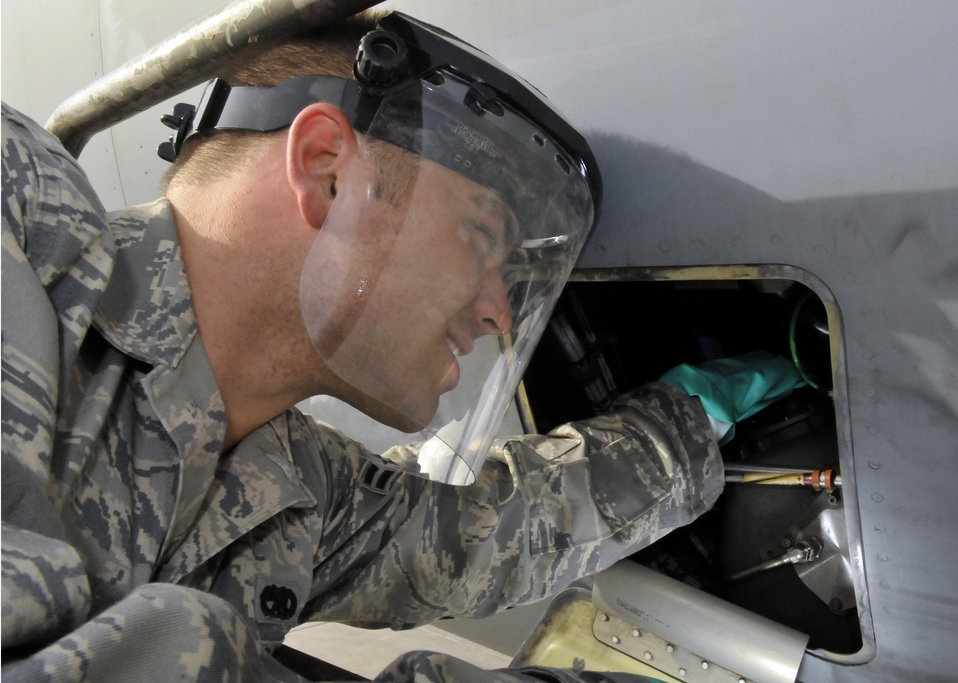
Balad Airmen

Airman 1st Class David Reynolds checks the oil on engine number one of a C-17 Globemaster III July 12, 2010, at Joint Base Balad, Iraq. Unlike fighter aircraft that are close to the ground, the C-17's engine is set approximately 10 feet of the ground, requiring the use of a maintenance stand to gain access. Airman Reynolds is a 521st Air Mobility Operations Group, Det. 5 electro-environmental systems apprentice.